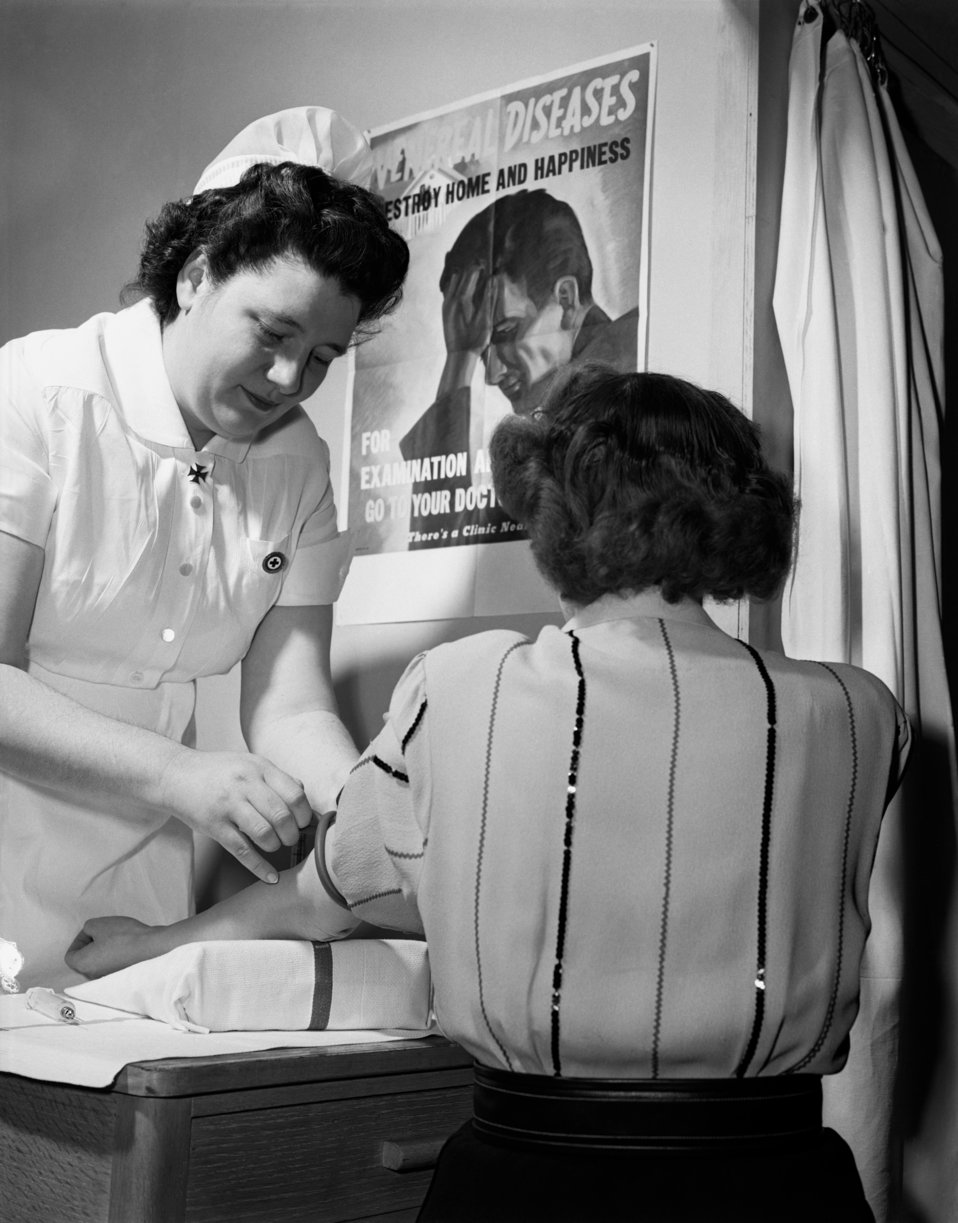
Public Health Nursing Oak Ridge 1947

3392-g DOE photo Ed Westcott 4-15-1947 Publicity for National Nurse Week Oak Ridge Tennessee